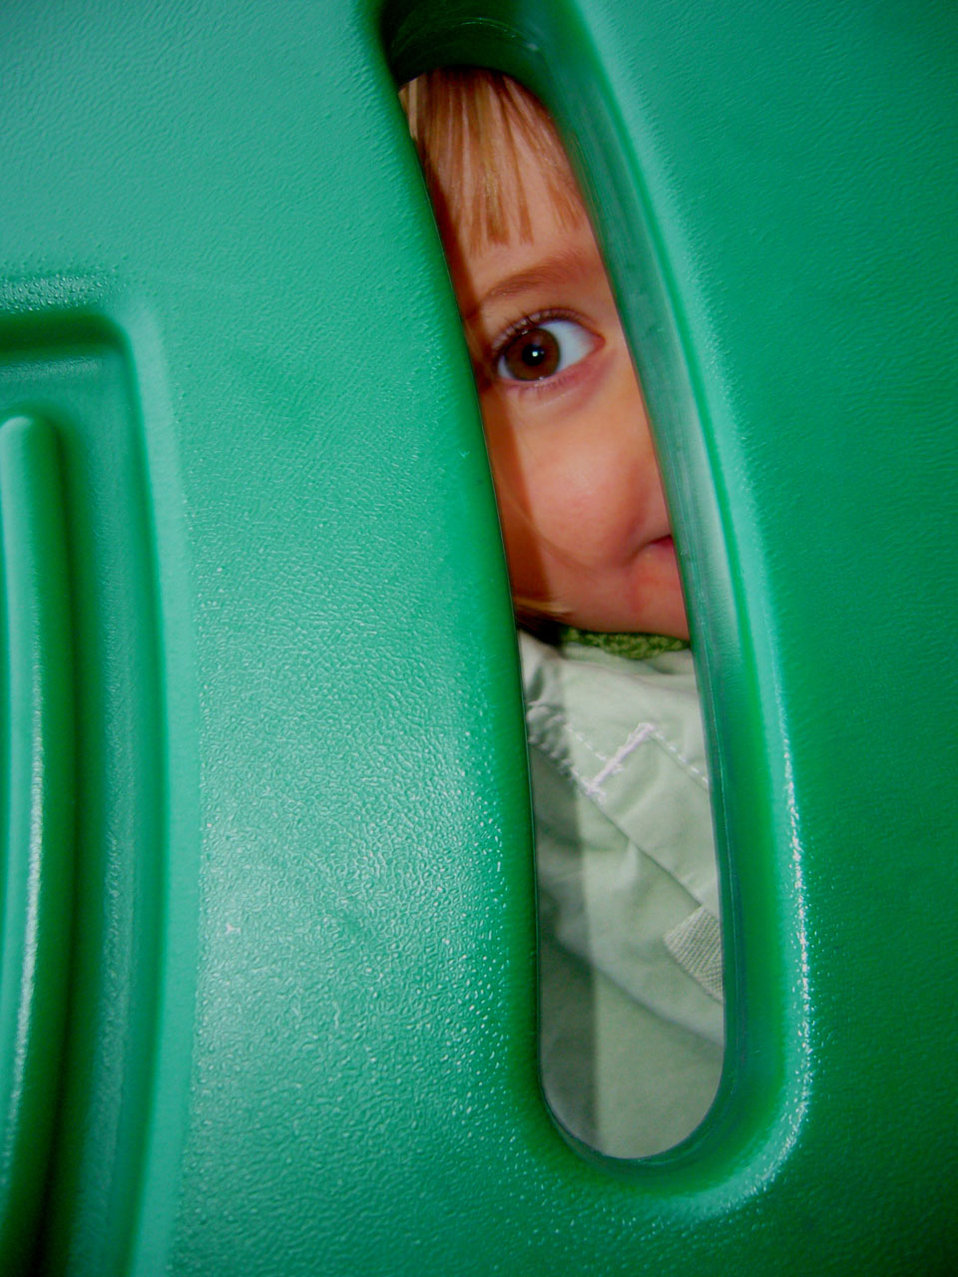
Little girl.